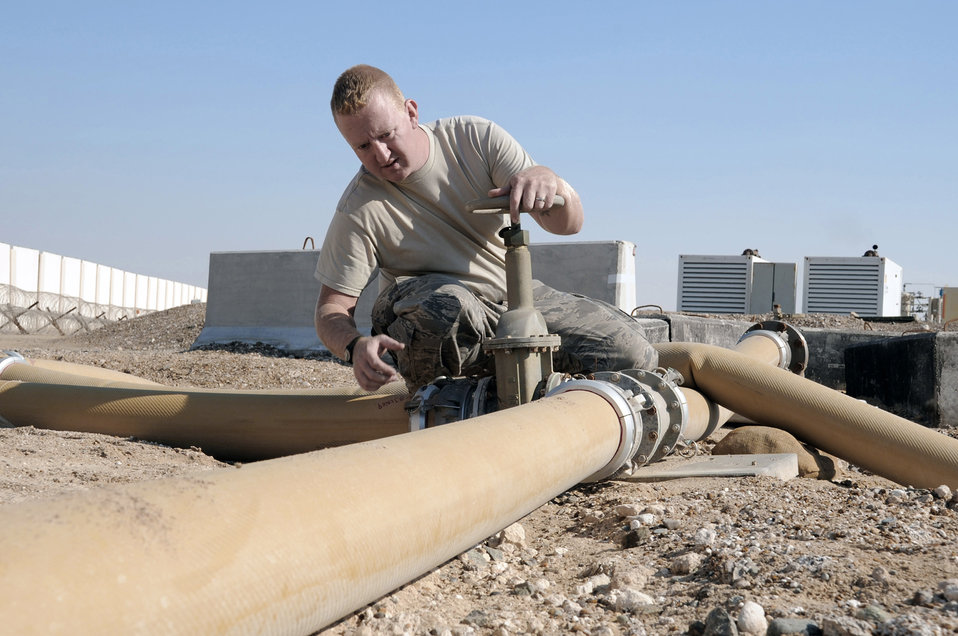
Construction begins on new fuel pipeline at Southwest Asia base

Staff Sgt. Garret Nichols checks a fuel pipeline connection during operations at the fuel bladder storage facility Jan. 6, 2010, at a base in Southwest Asia.